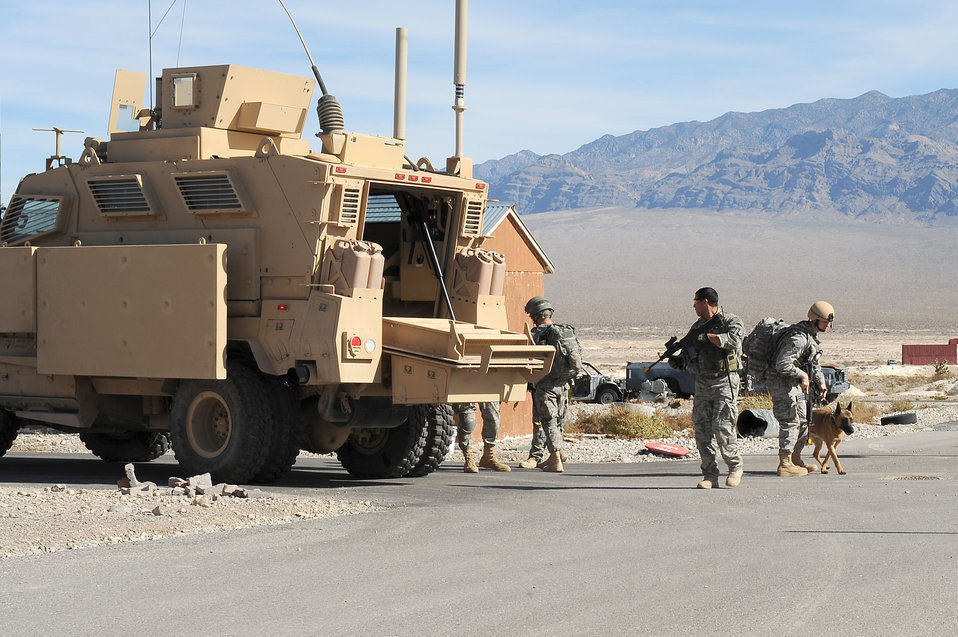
Nellis AFB selected to host new joint MWD training program

Security forces Airmen and their military working dogs secure the area after exiting a Mine Resistant Ambush Protected vehicle during a training exercise Oct. 29, 2010, at the Nevada Test and Training Range. The training exercise is part of a new Nellis Air Force Base, Nev., program created to condense the current 80 day training curriculum for handlers and MWDs.